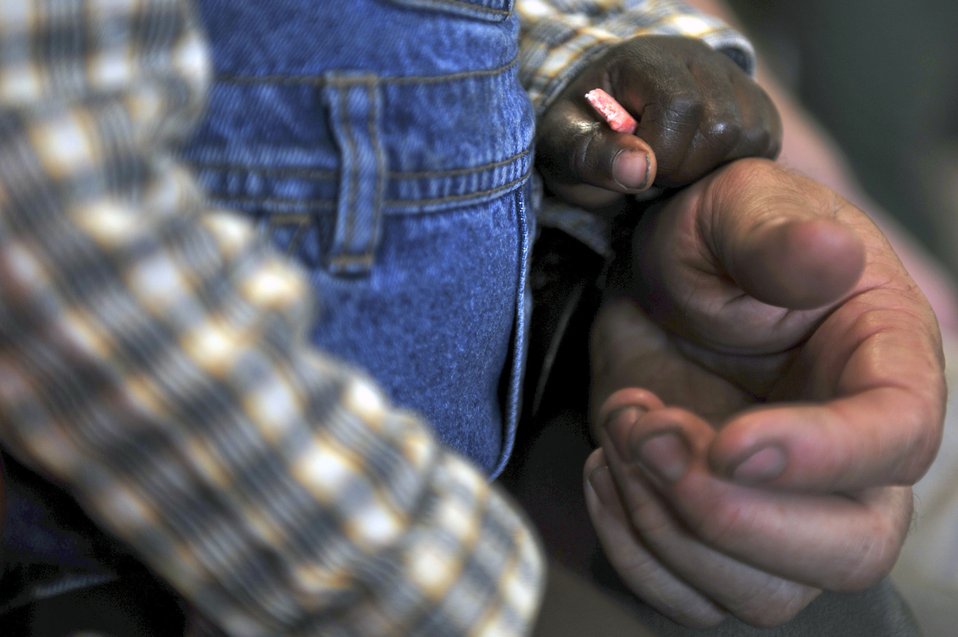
Evacuation

A Haitian boy holds a piece of gum as he waits to leave Toussaint L'Ouverture International Airport in Port-au-Prince, Haiti, Jan. 23, 2010. A C-17 Globemaster III flew about 200 people out of the country. Aircraft from all over the world are flying into the airport to drop off humanitarian aid and transport people out of the country in the aftermath of the devastating earthquake Jan. 12.